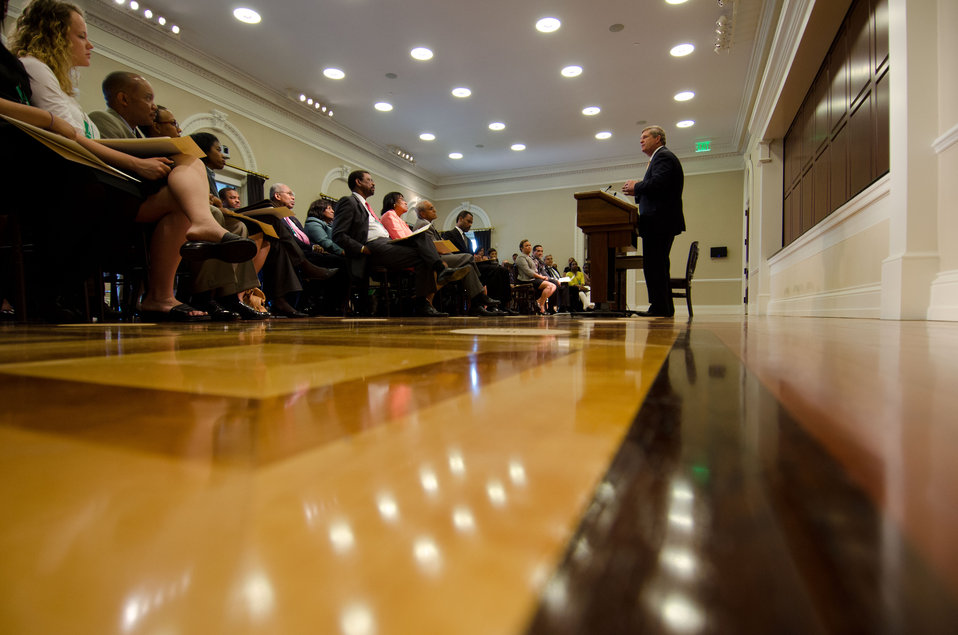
Agriculture Secretary Tom Vilsack speaks during the 2012 Historically Black Colleges and Universities 1890 Land-Grant University Memorandum of Understanding Signing Ceremony on Friday, June 29, 2012, in the White House’s Eisenhower Executive Office Building, Washington, DC. It has been150 years since the first Morrill Act of 1862, which was signed by President Abraham Lincoln. The action established land-grant universities in every state and territory. The second Morrill Act of 1890 provided funding to designate separate institutions of higher learning for blacks in those states that did not open the doors of their universities to black students.